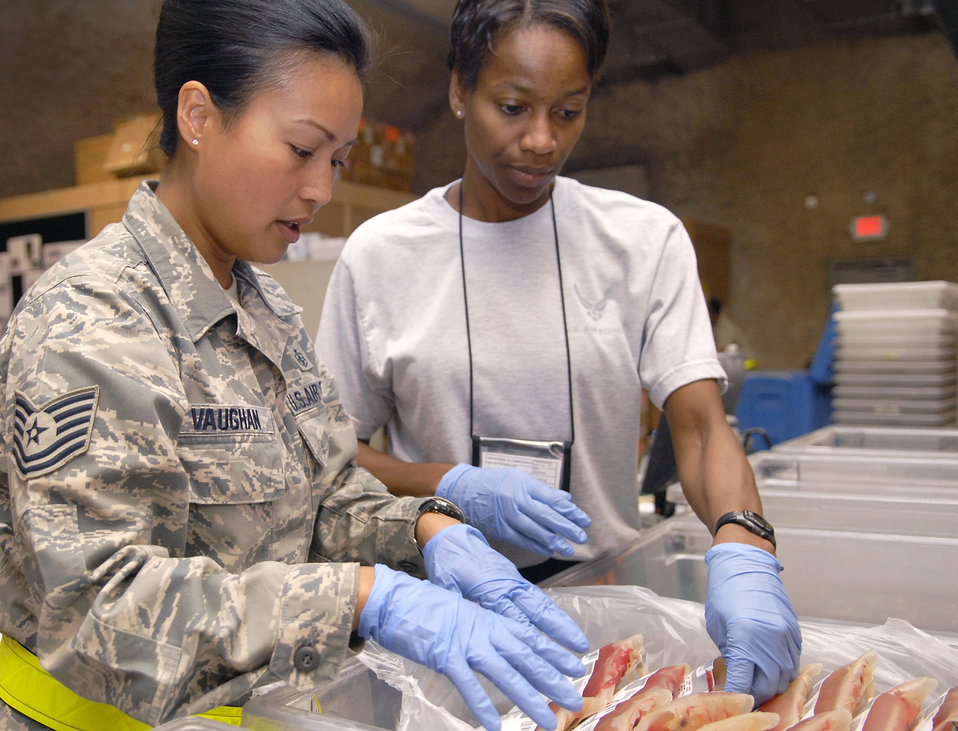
Blood Transshipment Center

Tech. Sgt. Marilou Vaughan and volunteer 1st Lt. Jacquelyn Smith inventory red blood cell units May 9 in the Blood Transshipment Center at this air base in Southwest Asia. Volunteers assist the BTC staff with inventorying incoming blood products before distribution throughout the U.S. Central Command area of responsibility. Sergeant Vaughn is a lab tech with the 379th Expeditionary Medical Group BTC.